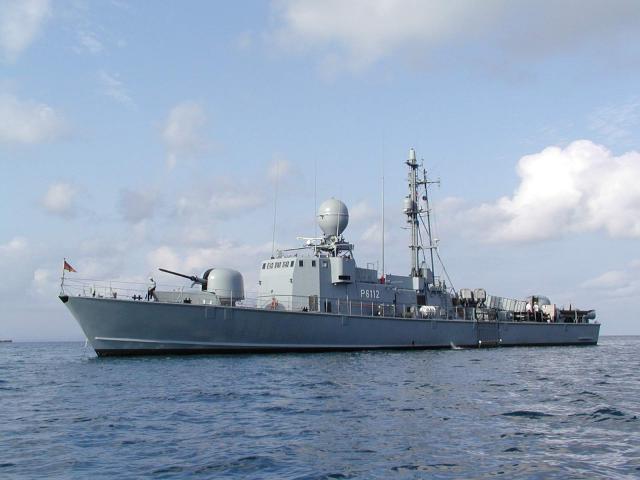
Deutsch: S 62 Falke im Roten Meer